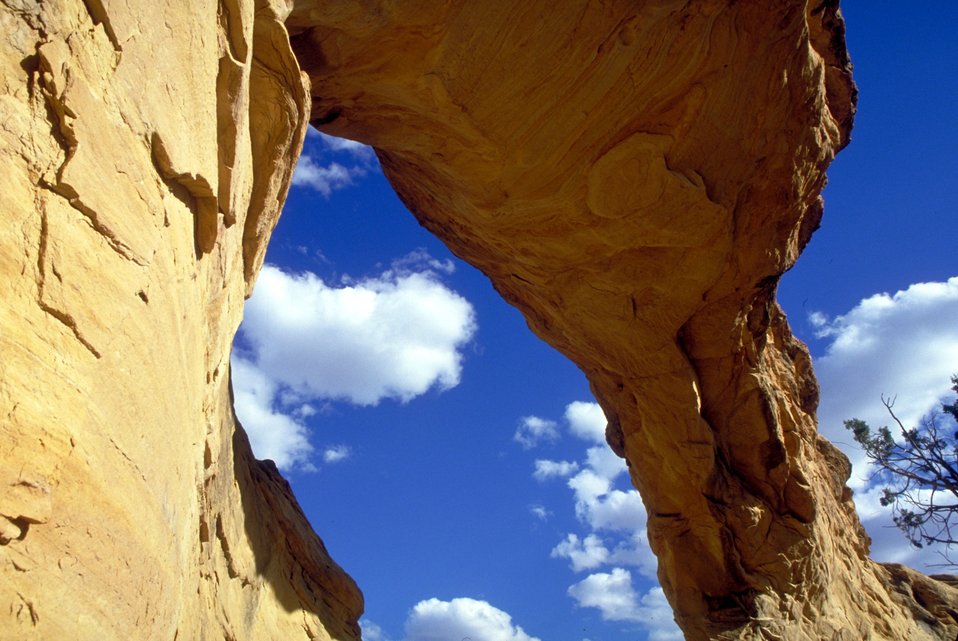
Dutchmans Arch, Head of Sinbad in the San Rafael Swell